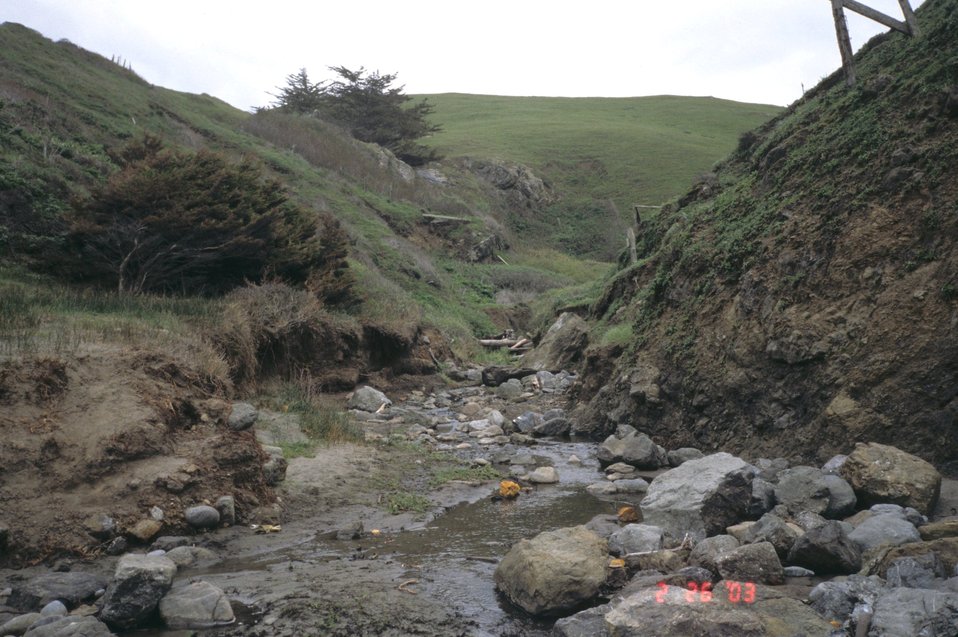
Pinnacle Gulch Beach